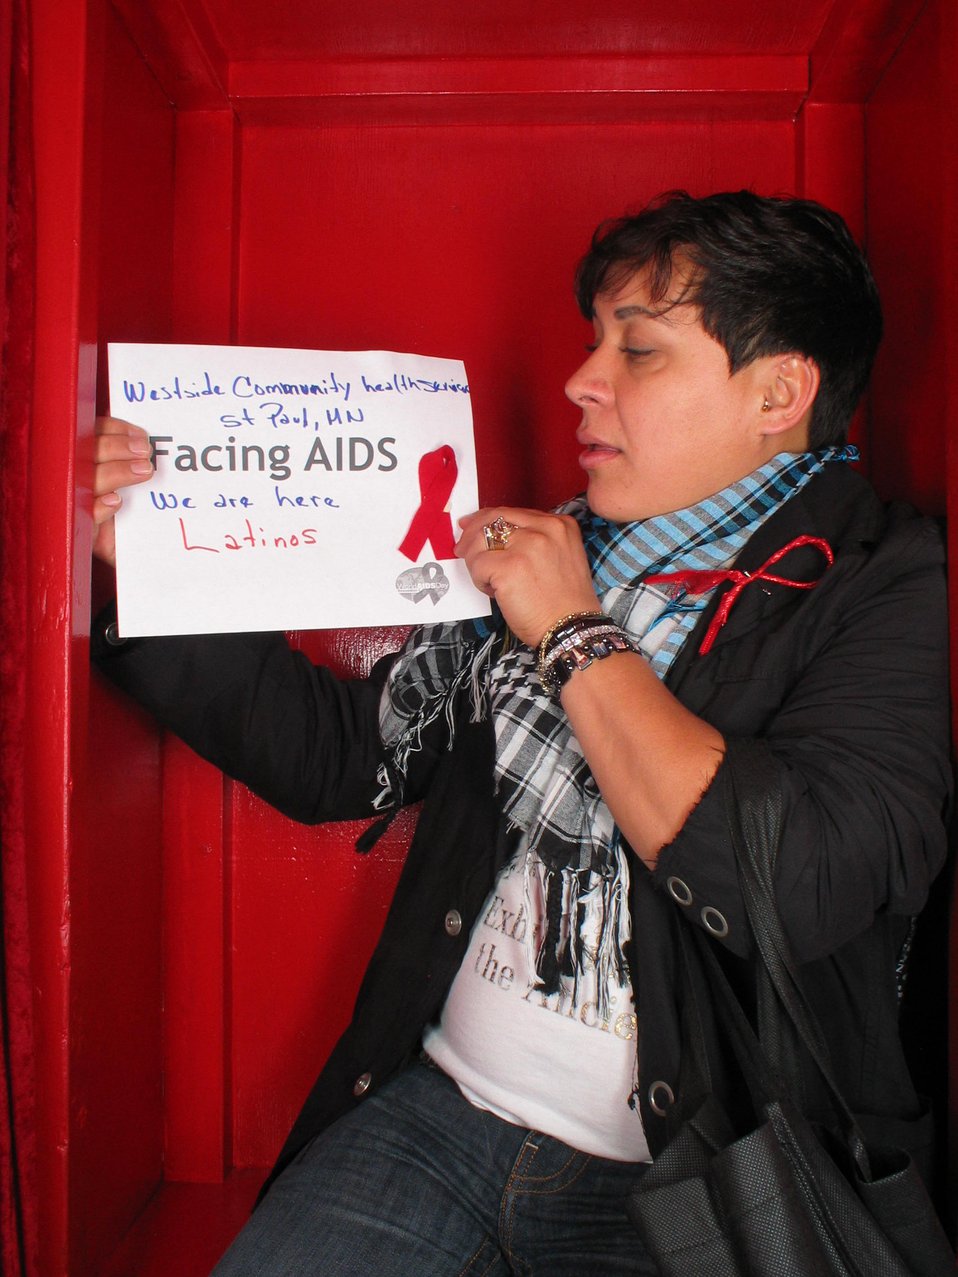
Facing AIDS We are here Latinos.